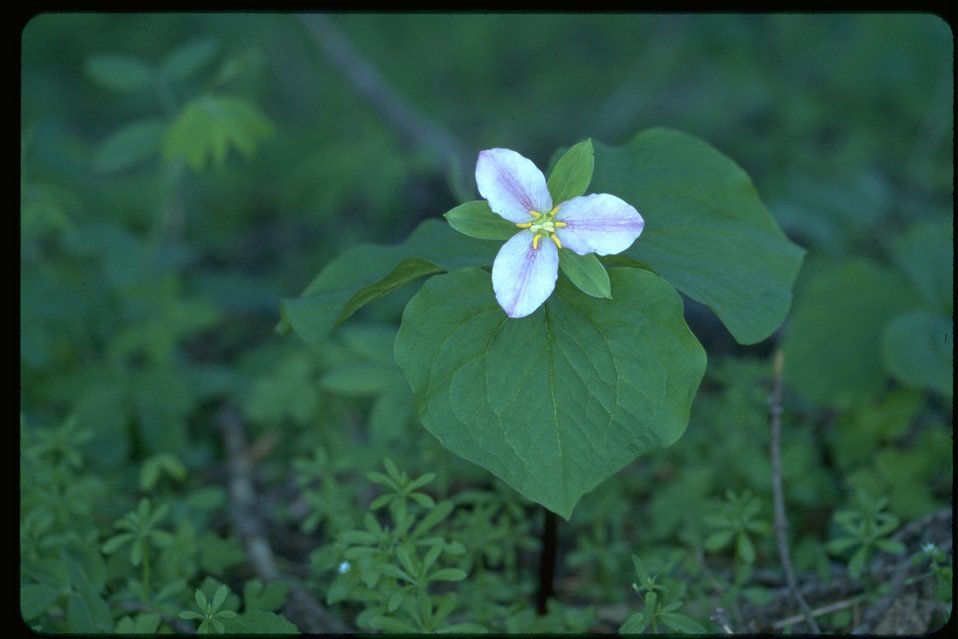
Medium shot of White Trillium with purple stripes.